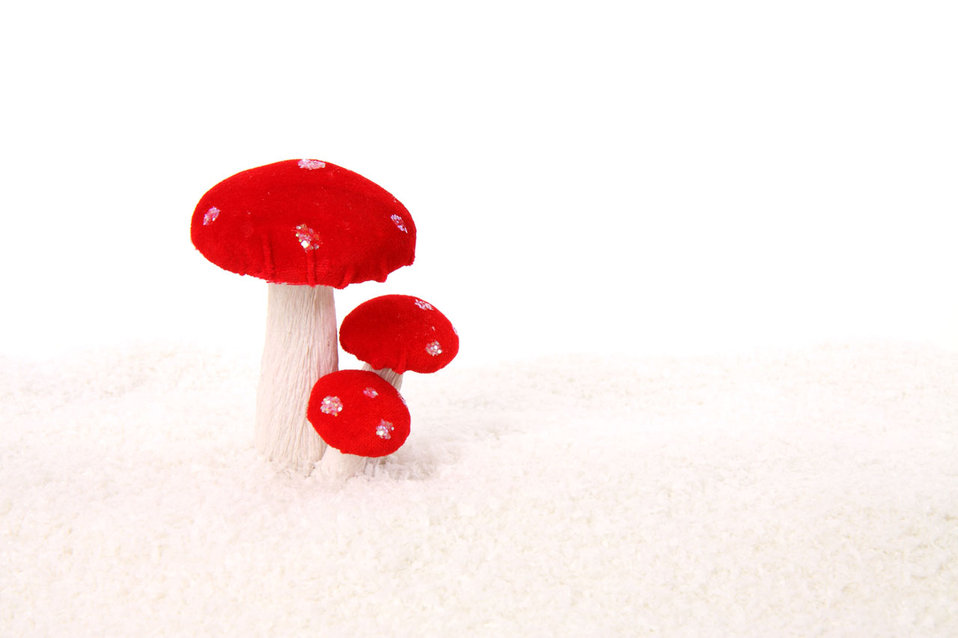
Mushrooms in snow on white background.